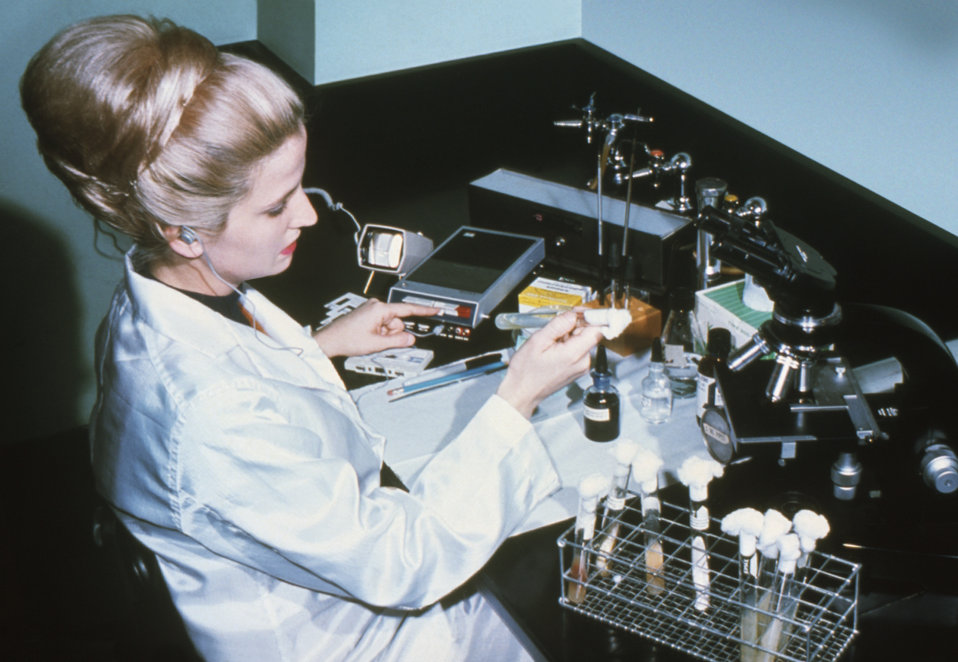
This 1970 photograph shows CDC employee Glennis Mitchell working with a mycology lab training kit.